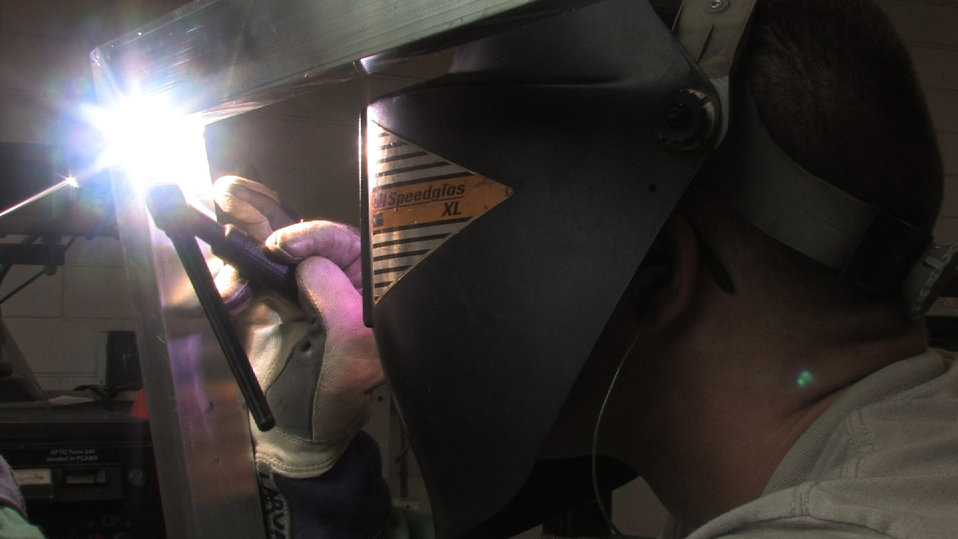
Hot to the touch

Staff Sgt. David Larva welds a gate door July 27, 2011, at Minneapolis-St. Paul Air Reserve Station, Minn. Larva is assigned to the 934th Maintenance Squadron.